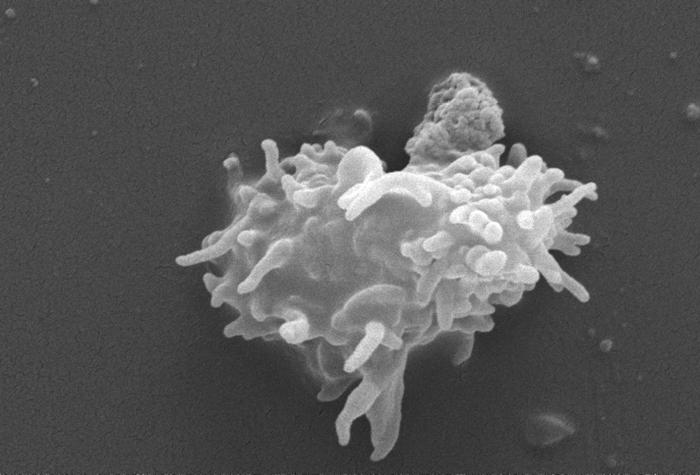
This scanning electron micrograph (SEM) revealed some of the ultrastructural features seen on the surface of an Acanthamoeba polyphaga. protozoan. Note the numerous projecting pseudopodia, from the Latin pseudo = false, and podia = feet, which extend from the organism's surface. These enable the amoeba to move about, and grasp objects in its environment.